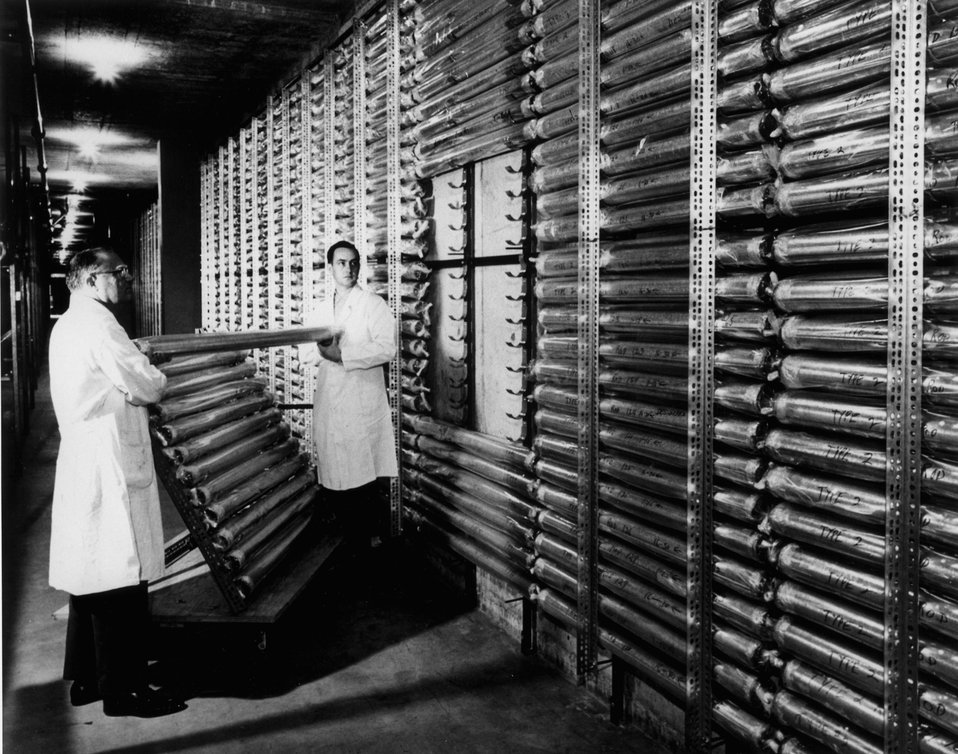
Fabrication of HTGR (High Temperature Gas-Cooled Reactor) fuel elements. c. 1964